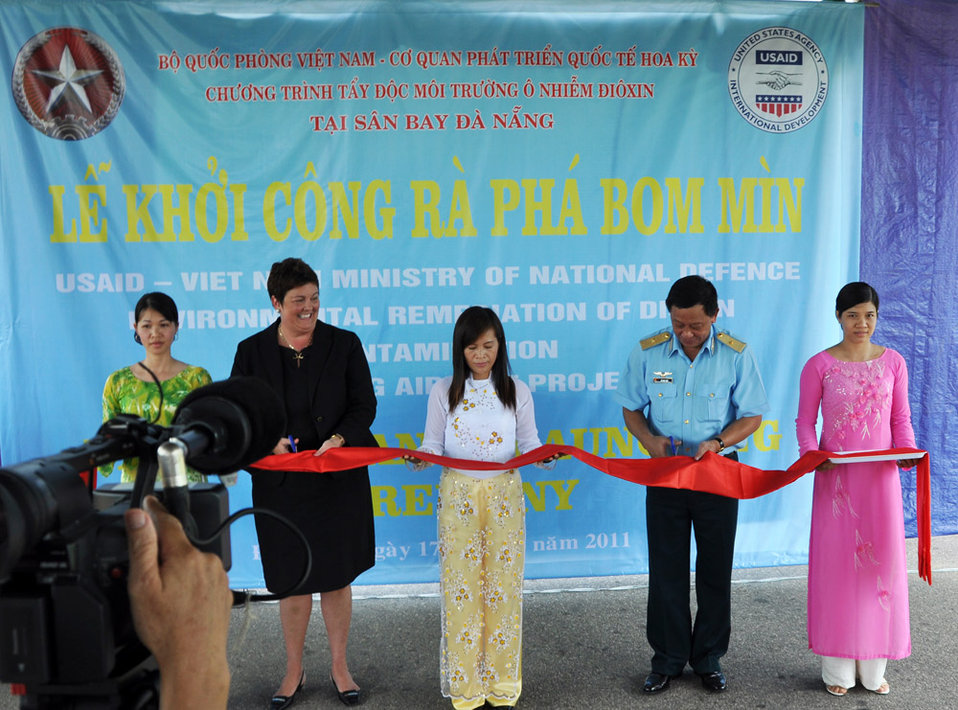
UXO clearance ceremony, June 17, 2011, in Danang, Vietnam.